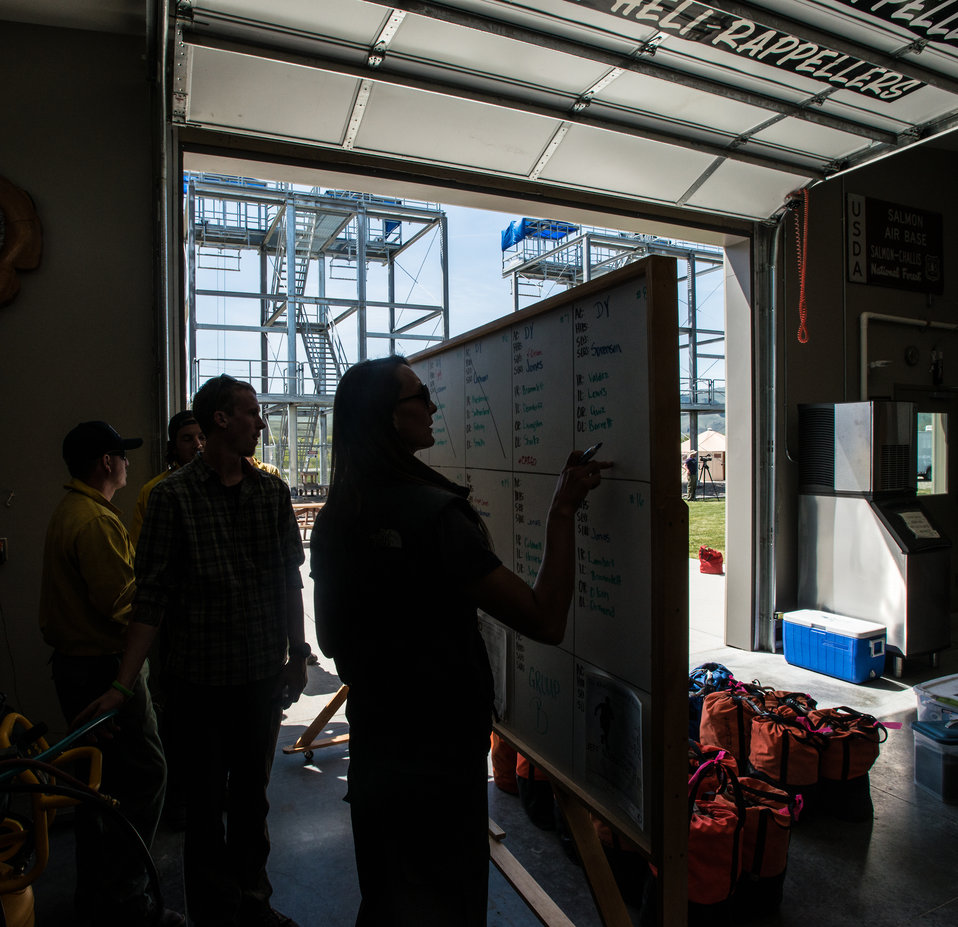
Chief Manifest Specialist Jessica Martin is in charge of ensuring the right veteran wildland firefighter rappeller is assigned with the helicopters, spotters and evaluators that they need to train and become recertified at the U.S. Department of Agriculture (USDA) U.S. Forest Service (USFS) National Helicopter Rappel Program’s Rappel Academy at Salmon Air Base in Salmon, ID on Wednesday, May 14, 2014. From May 12, 2014, 72 veteran rappellers from all over the nation, 30 support staff, and three helicopters with flight crews attend the training at Salmon Air Base. Participants will rappel into the Perreau Creek area. The annual training is delivered in accordance with the National Rappel Operations Guide; strengthen leadership, teamwork, and communications within the rappel community, and produces quality aerial delivered firefighters for use in fire and aviation operations. The USDA Forest Service National Helicopter Rappel Program’s primary mission is initial attack. Rappel crews may be utilized for large fire support, all hazard incident operations, and resource management objectives.